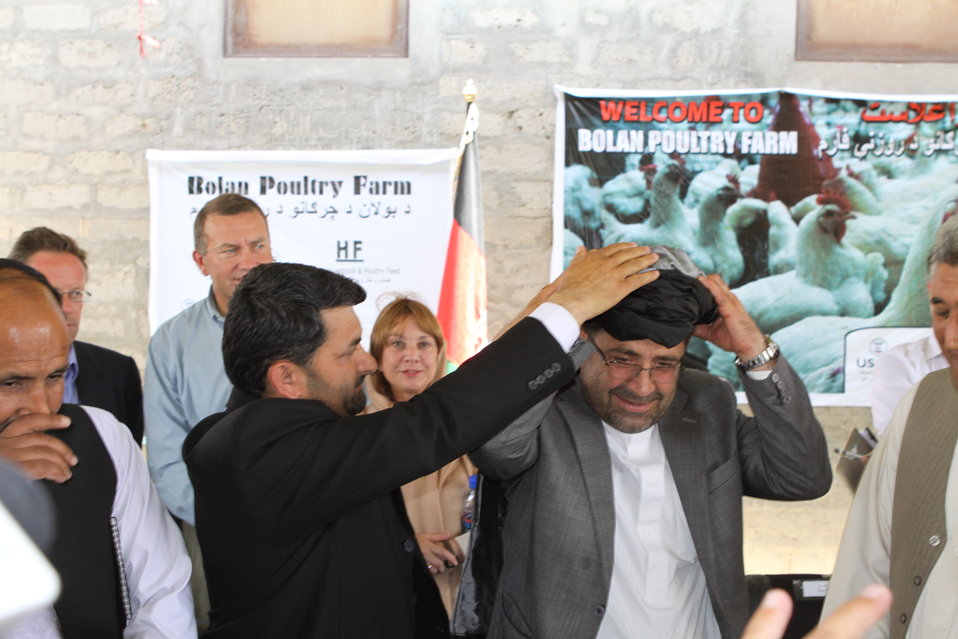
Bolan Poultry Farm